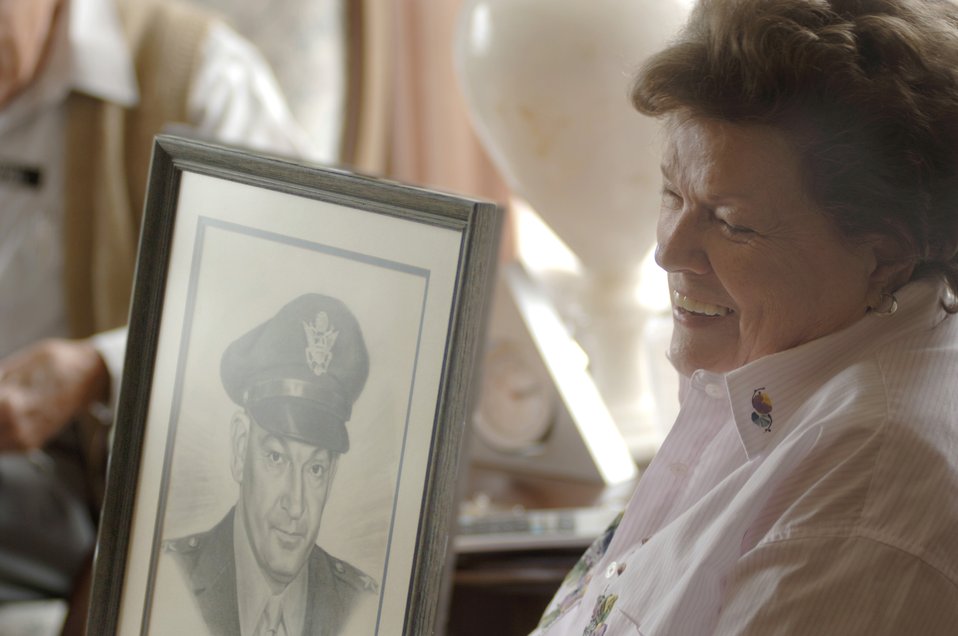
Memories of father stay strong, even after 63 years

Margaret Ramey Watkins reminisces about the man in the portrait, her father, Brig. Gen. Howard K. Ramey. General Ramey was a founding member of the Order of Daedalians, a fraternal order of military pilots.